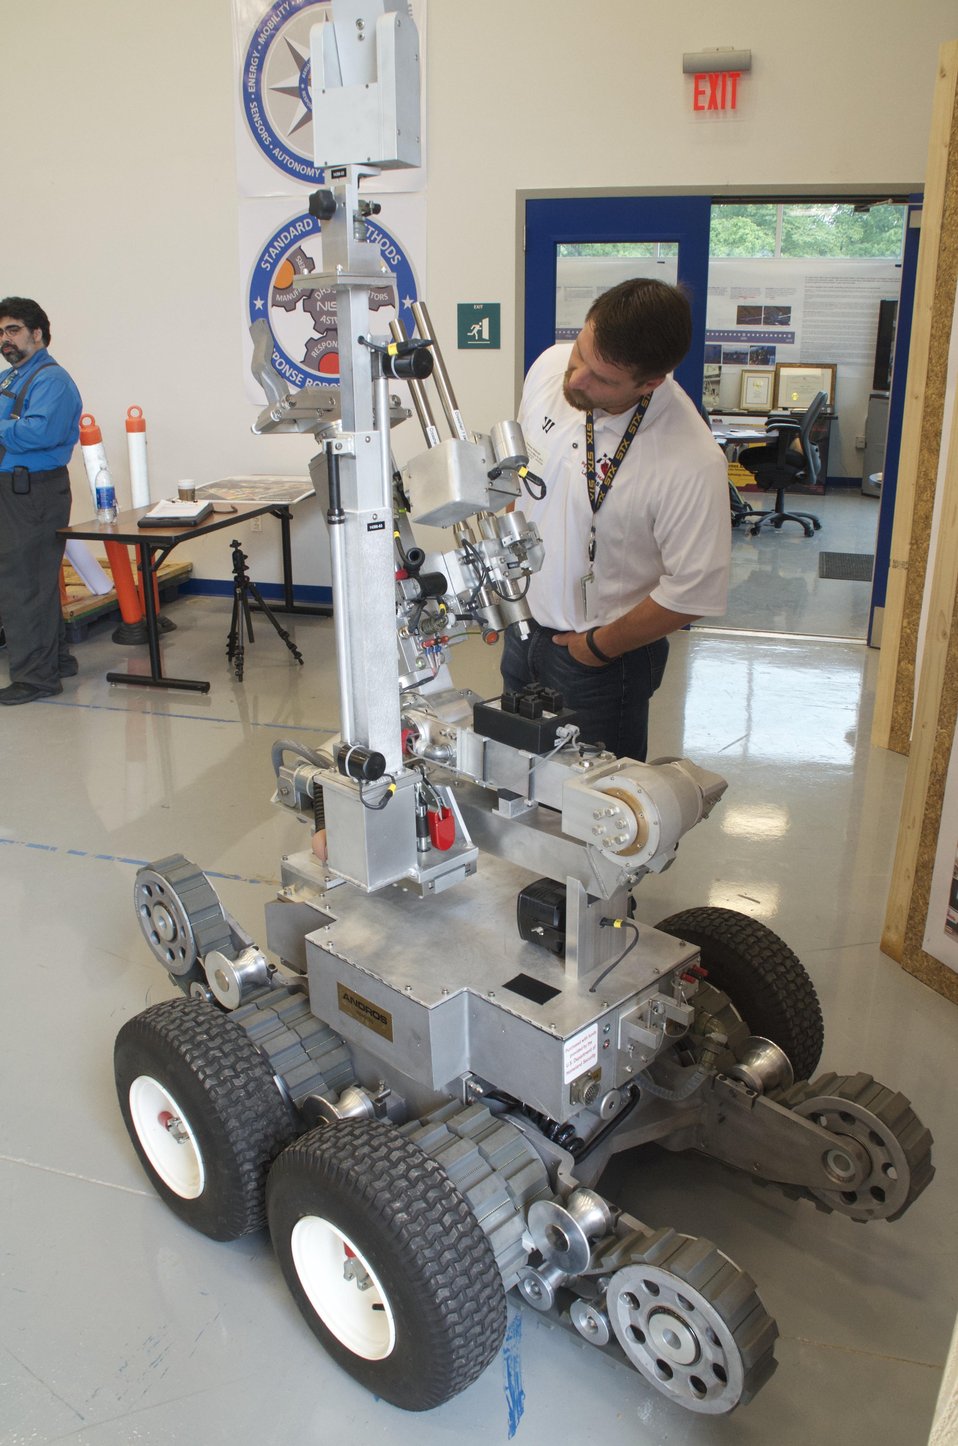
Remotec Andros Bomb-Disposal Robot

Matthew Hickman, Department of Homeland Security Program Manager, with a Remotec Andros bomb-disposal robot.

Development of test methods at the NIST Robot Test Facility is funded in part by the NIST Office of Law Enforcement Standard's Counterterrorism and Response Technologies program.